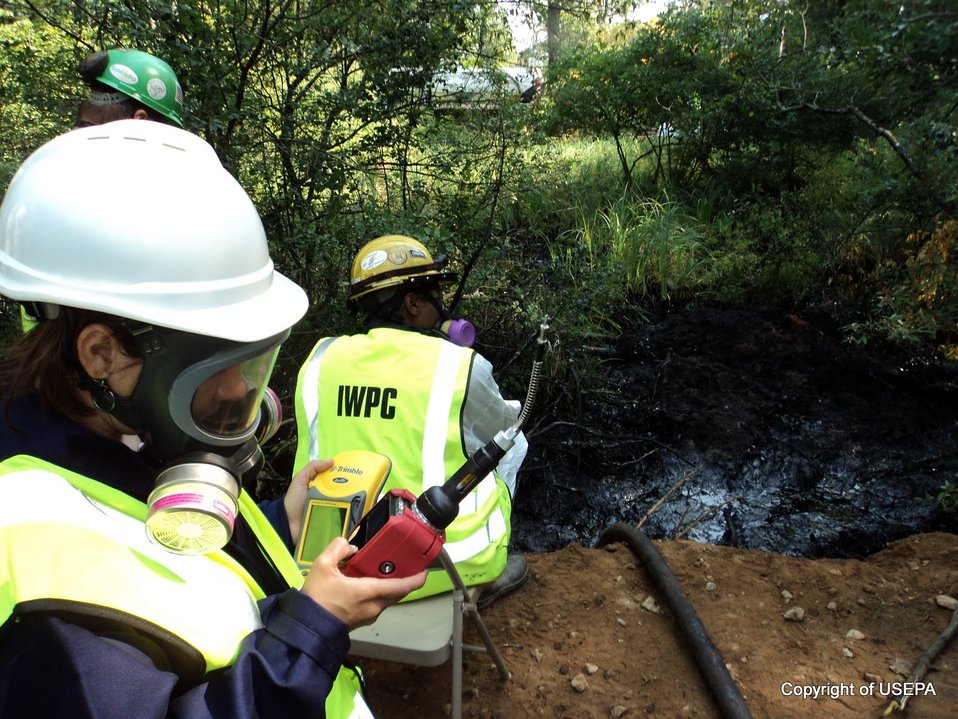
air monitoring 100 yds from break in pipeline

Air Sampling in within 100 yards from the source of the spill.